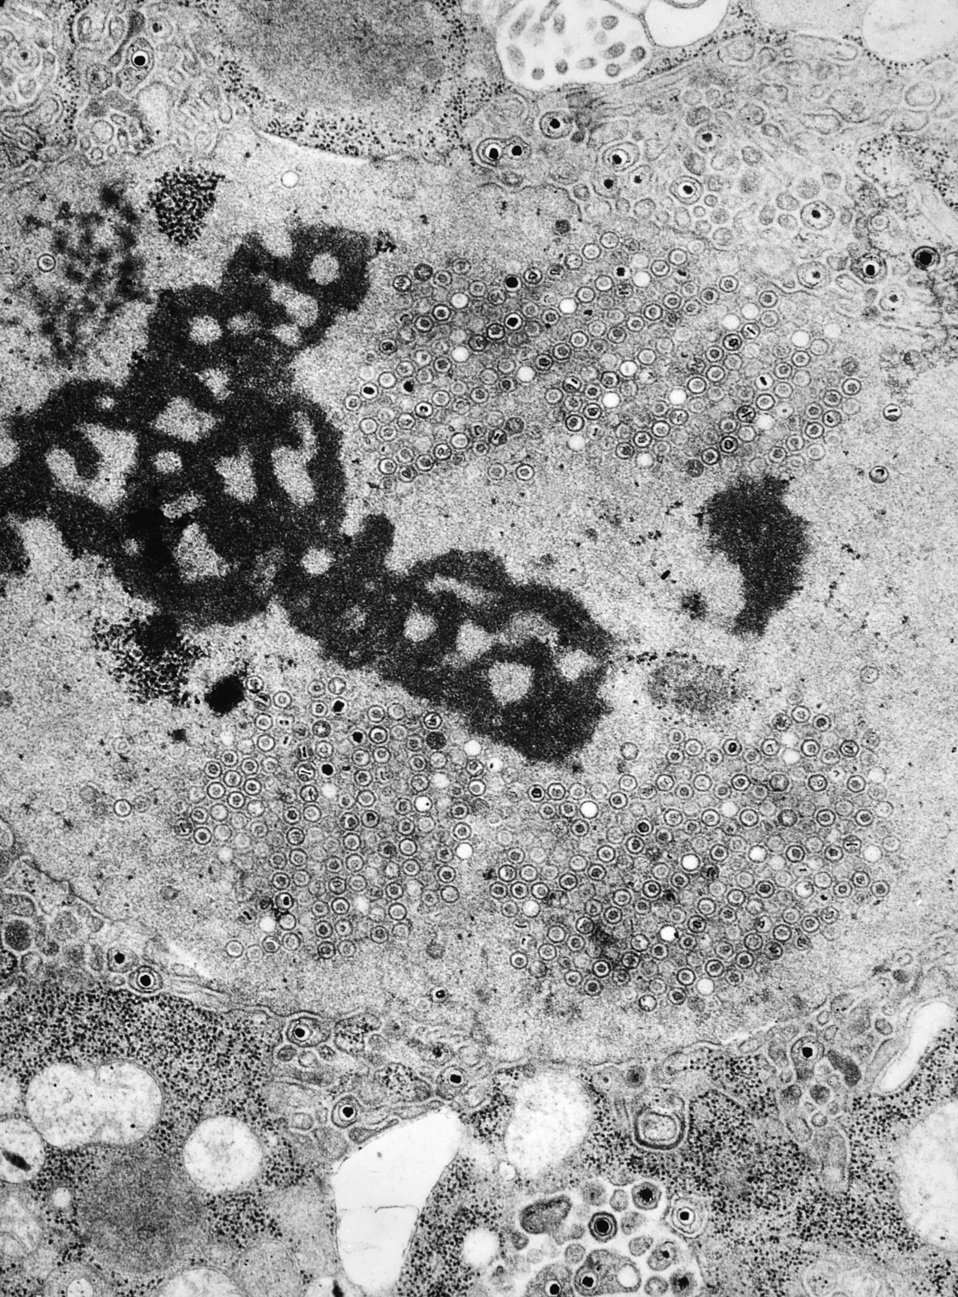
This negatively-stained transmission electron micrograph (TEM) revealed the presence of numerous herpes simplex virions, members of the Herpesviridae virus family. There are two strains of the herpes simplex virus, HSV-1, which is responsible for cold sores, and HSV-2, which is responsible for genital herpes. At the core of its icosahedral proteinaceous capsid, the HSV contains a double-stranded DNA linear genome.